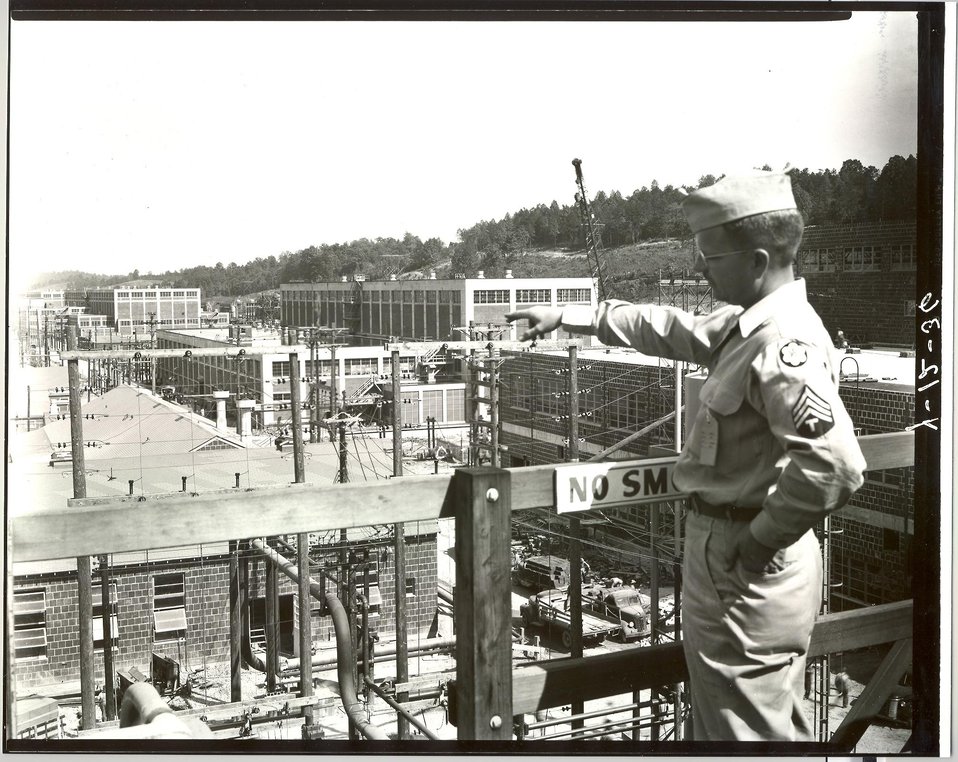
General View of Y-12 Looking East